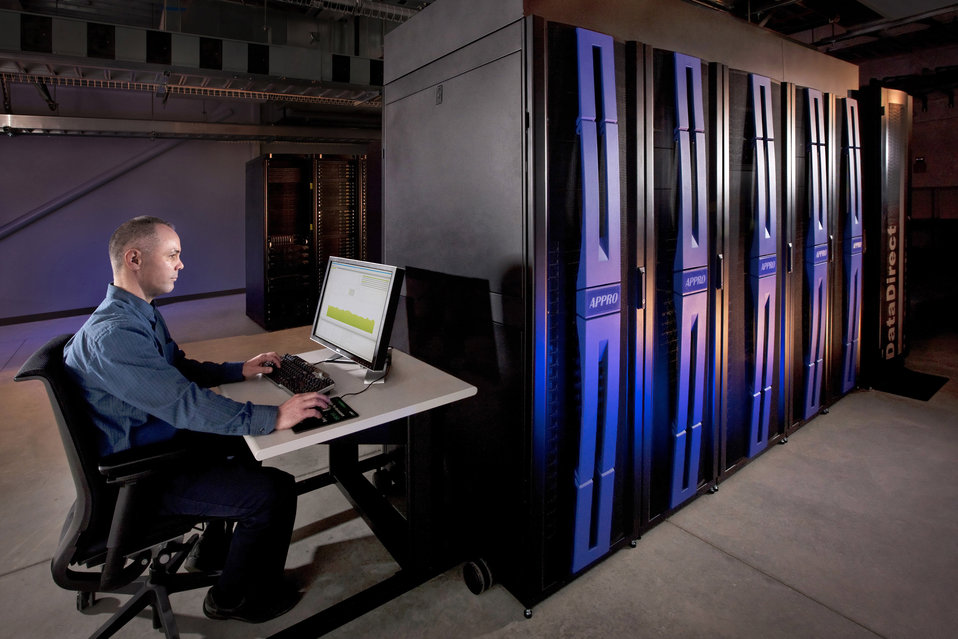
Sandia researchers at the Combustion Research Facility (CRF) apply a variety of numerical methods and models to Simulate combustion processes relevant to propulsion and power devices.

Calculations are enabled by an array of supercomputing facilities and platforms. Shown here is a mid-scale cluster located in the Combustion Research Computation and Visualization facility at the CRF. This machine has a peak speed of 50 teraflops and a storage capacity of 480 terabytes.